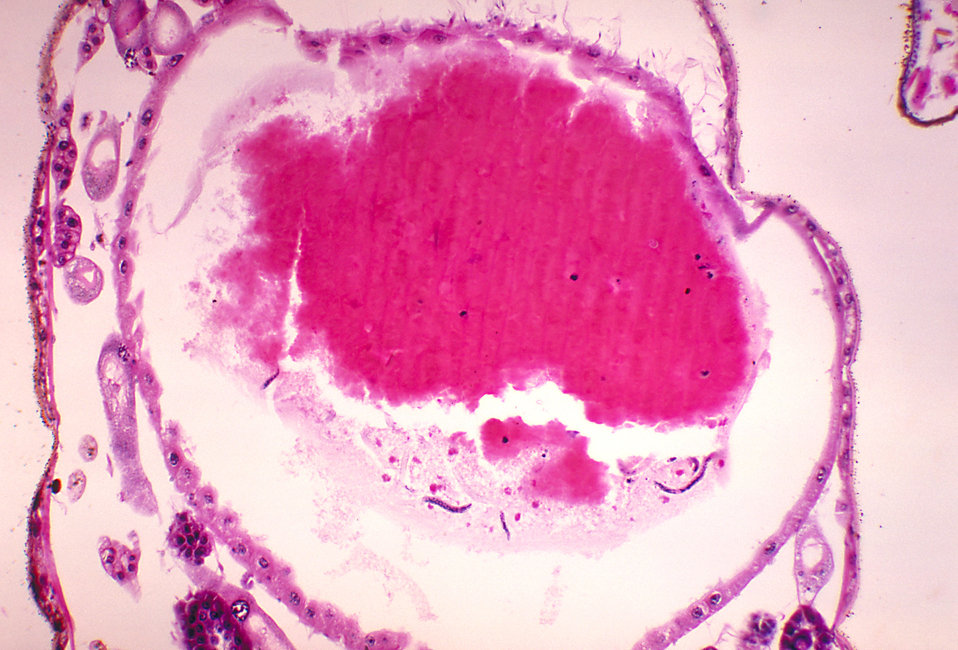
A photomicrograph revealing the histology of Onchocerca volvulus developing in a Black Fly, Simulium ochraceum.